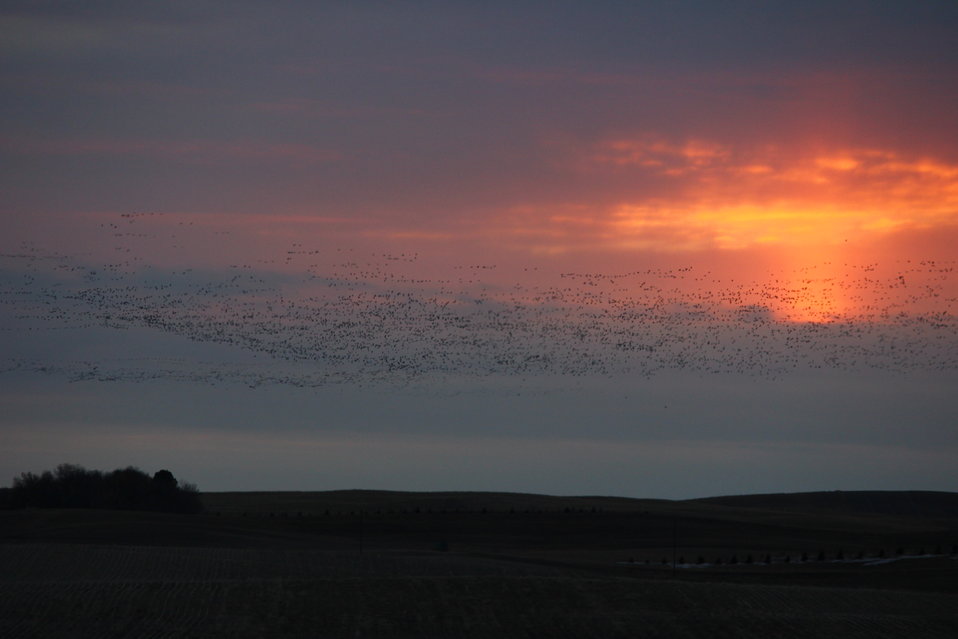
Light Goose Migration

Snow goose migration is in full swing this evening on a late March date. The Kulm Wetland Management District in North Dakota is in the Central Flyway. These birds are making their way north to their breeding grounds in northern Canada and Alaska for the summer.